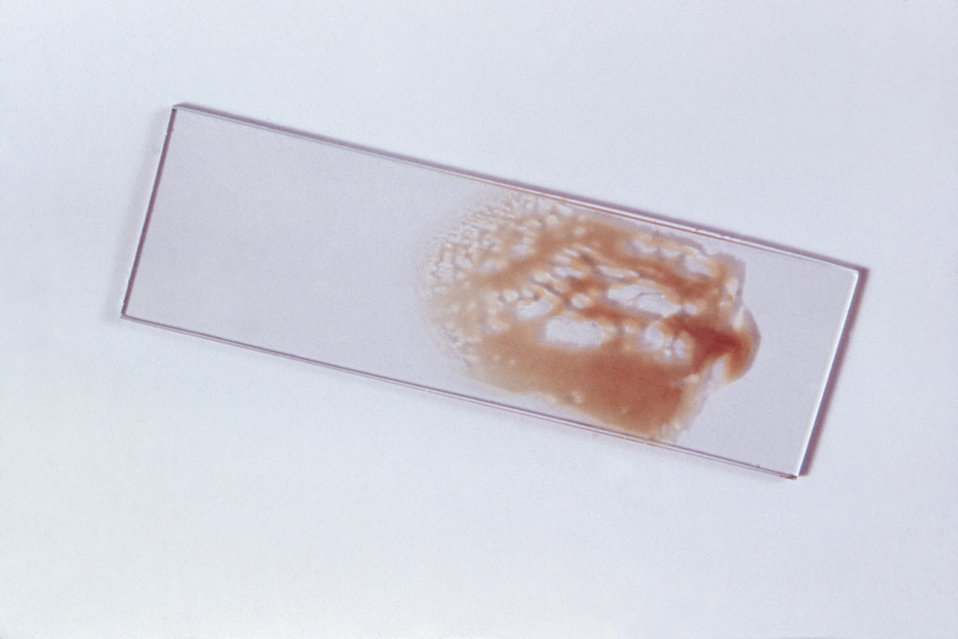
This slide preparation yielded a poor result due to the presence of grease on the glass surface.